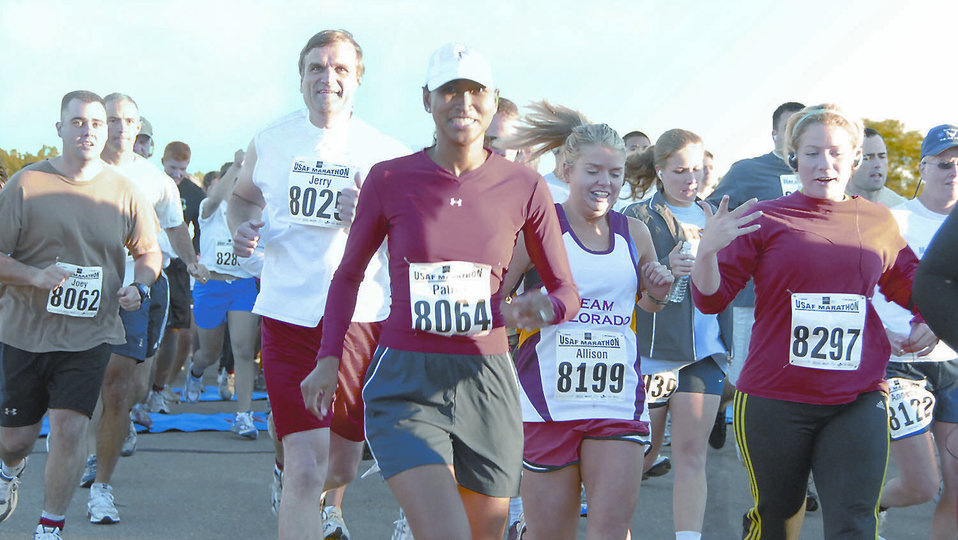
U.S. Air Force Marathon

The 2007 United States Air Force Marathoner runners take off from starting line. The annual marathon is held at Wright-Patterson Air Force Base in Dayton, Ohio. The 2008 marathon will take place Sept. 20.